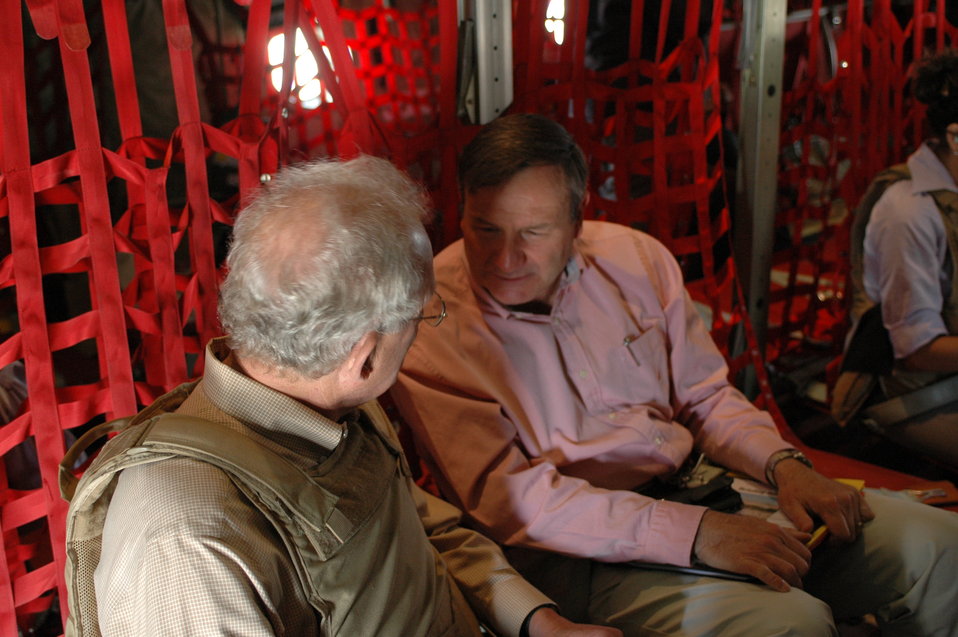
CODEL Berman